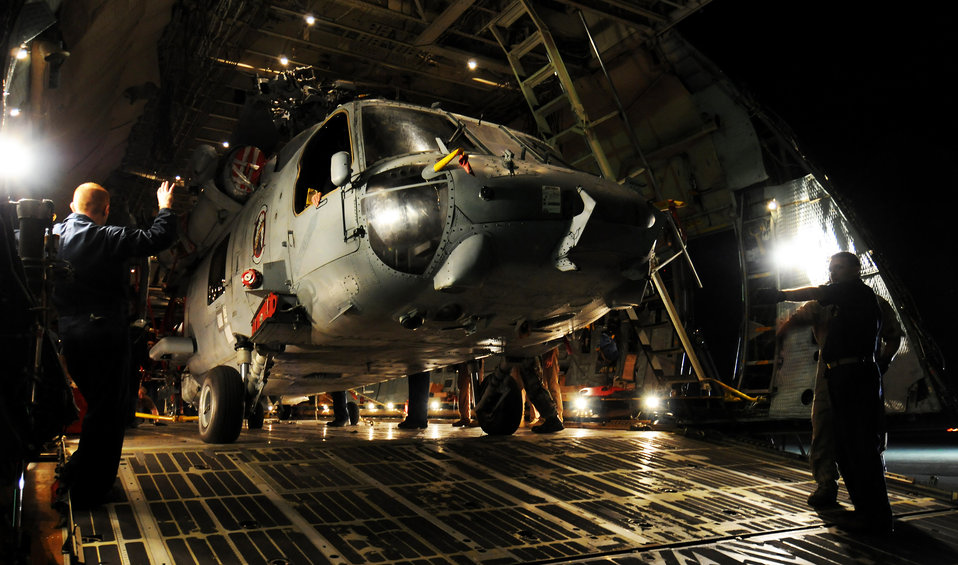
Just the right fit

Sailors from Helicopter Sea Combat Squadron TWO-FIVE at Guam's A.B. Won Pat International Airport guide the last of five helicopters into the cargo bay of a C-5 Galaxy March 13 on the flightline at Andersen Air Force Base, Guam. Airmen from the West Virginia Air National Guard's 167th Airlift Wing and the 734th Air Mobility Squadron at Anderson Air Force Base, Guam, along with the Sailors loaded three MH-60S and two SH-60H helicopters inside the cargo aircraft for transport to Naval Air Station North Island in San Diego.